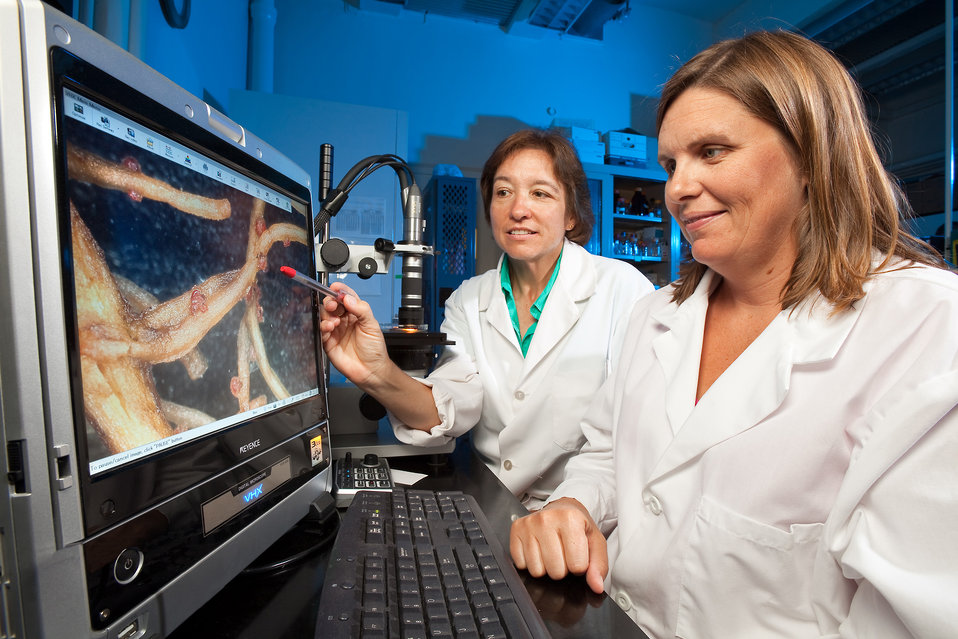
U.S. Department of Agriculture (USDA) Agricultural Research Service (ARS) plant pathologist Sally Stetina and technician Kristi Jordan examine cotton roots with a microscope to determine the level of infection by reniform nematode on July 19, 2011. By comparing infection levels in resistant test lines to those in susceptible controls, the scientists can identify lines with the most resistance.